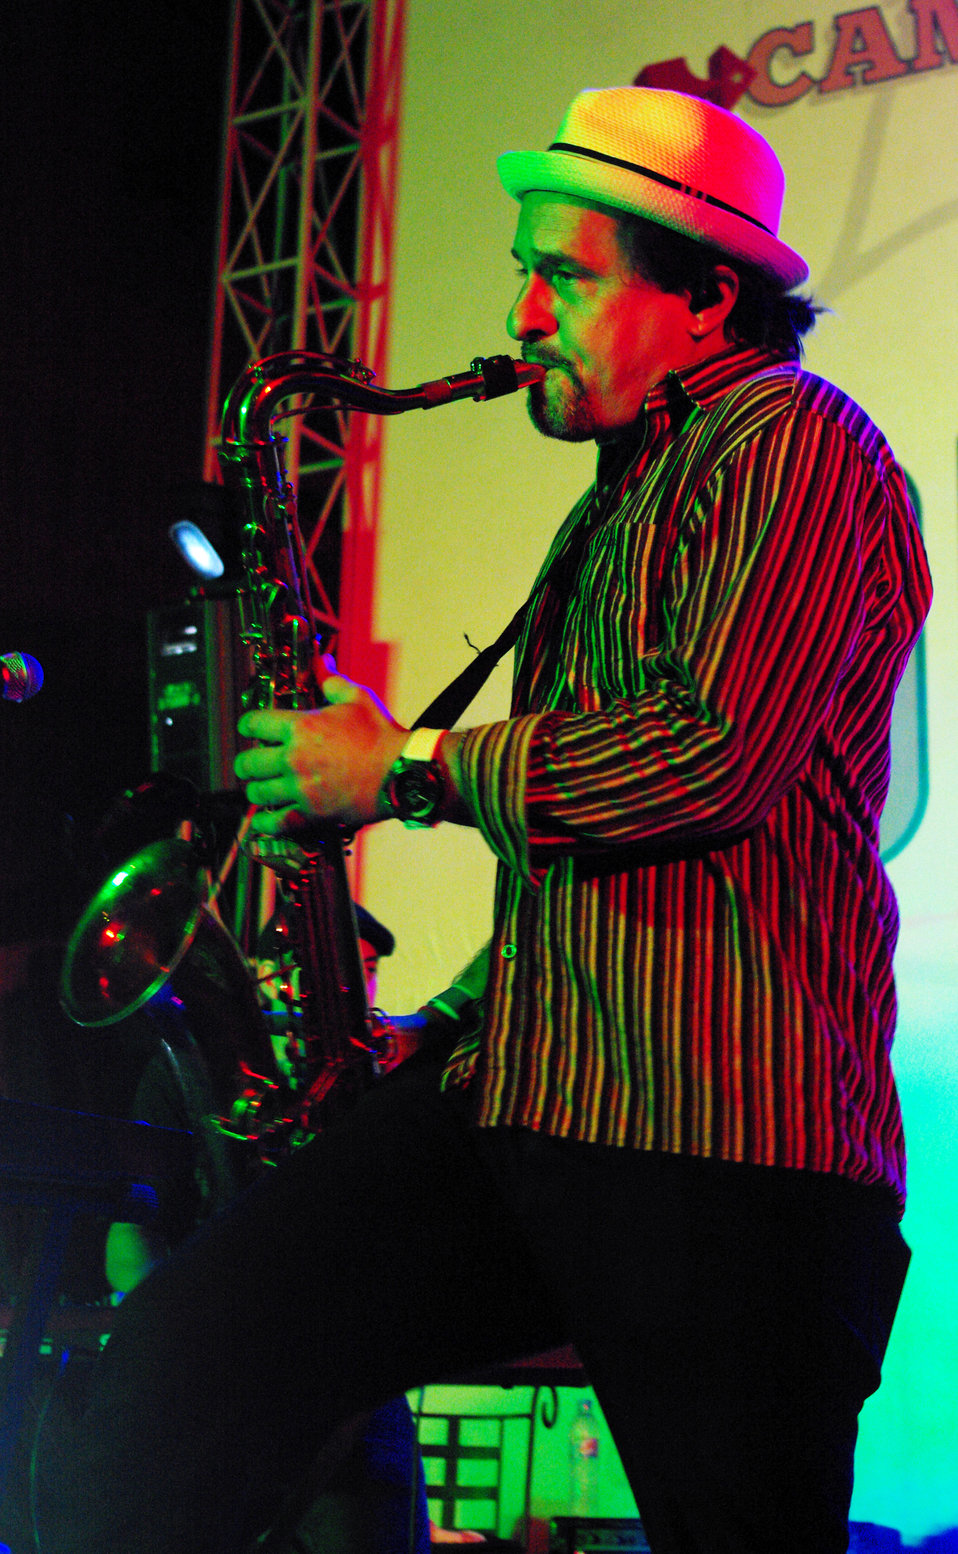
PEPFAR, U.S. Embassy Host Dengue Fever Concert in Hanoi